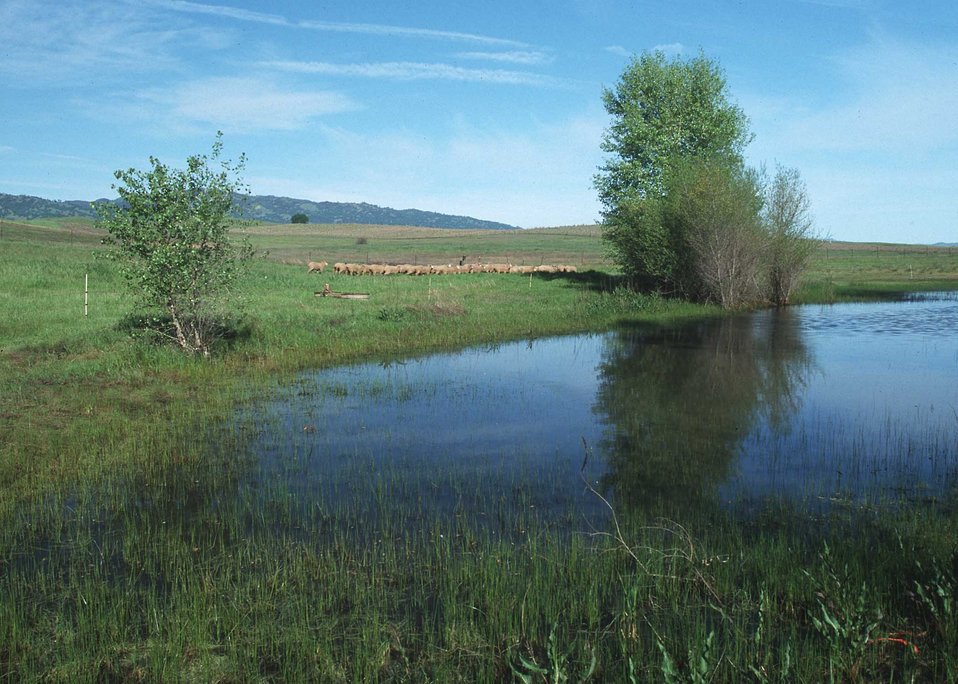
Restored wetland in Yolo County.